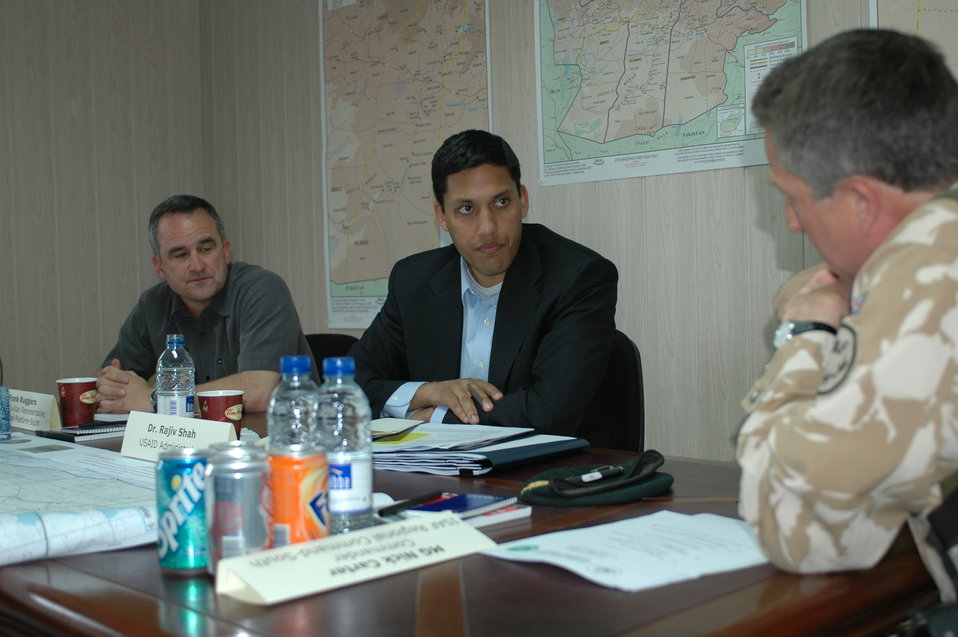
Dr Shah Visits Kandahar April 9, 2010